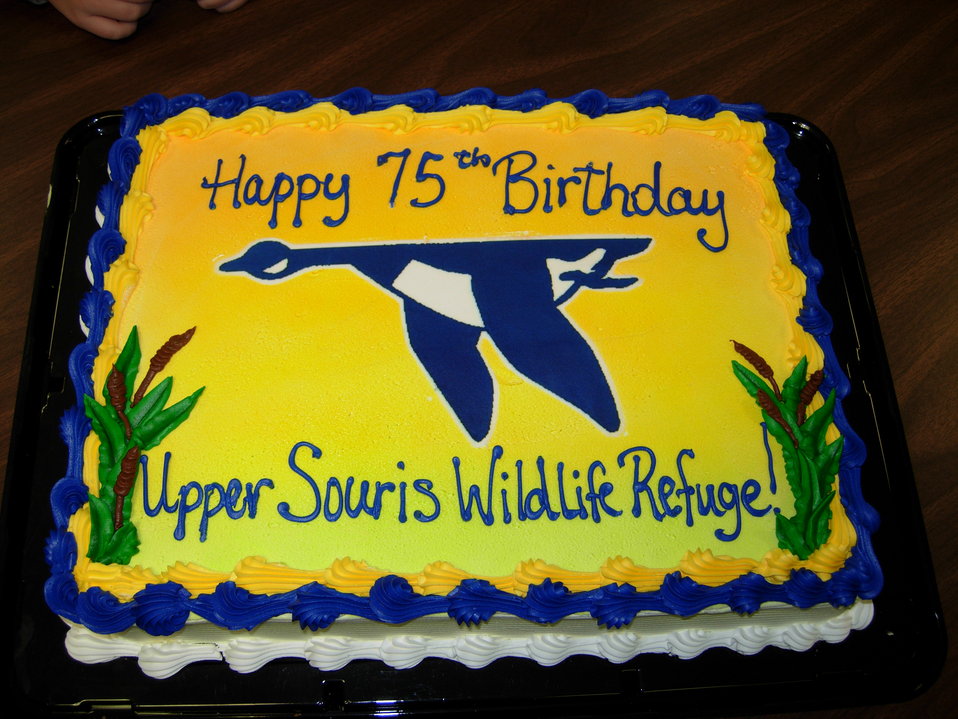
Happy 75th Upper Souris!

Cake for 75th Birthday for Upper Souris National Wildlife Refuge!